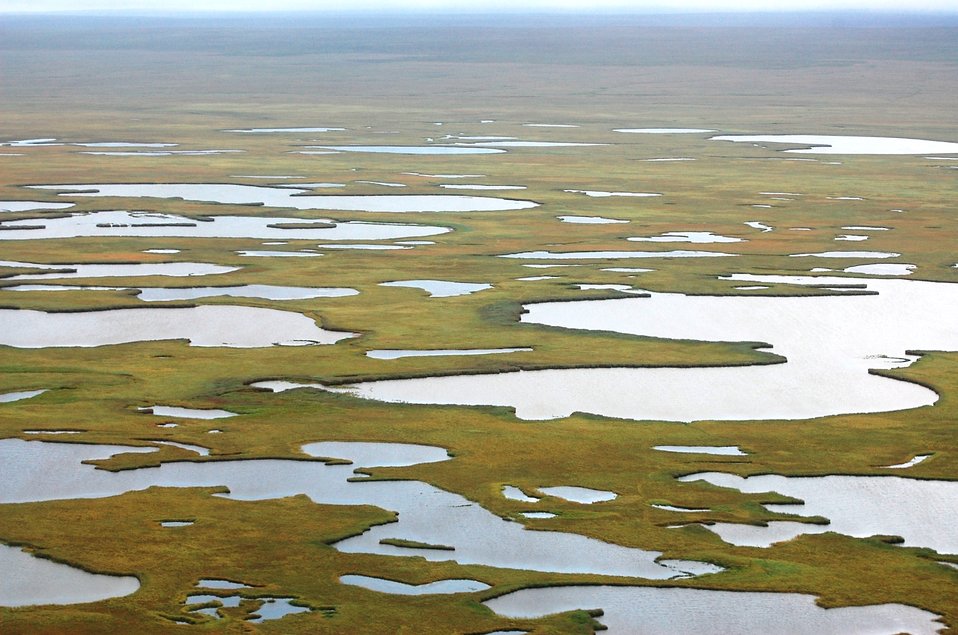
Joshua Green area

Izembek National Wildlife Refuge